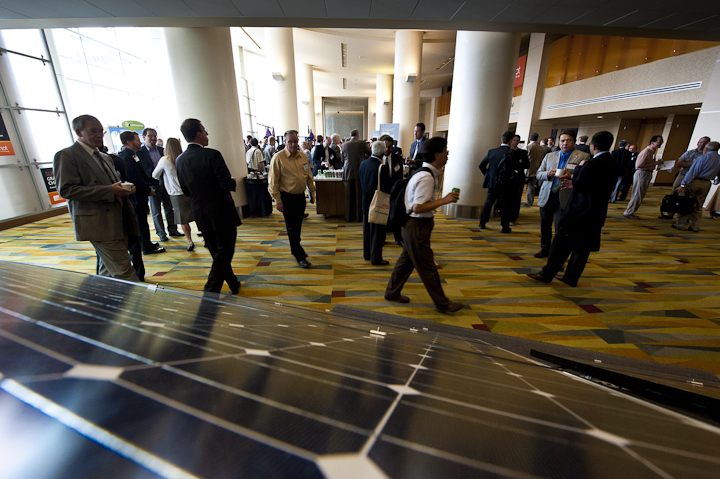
SunShot

June 13, 2012- Participants talk outside the plenary session at the SunShot Grand Challenge Summit and Technology Forum in Denver, Colorado.